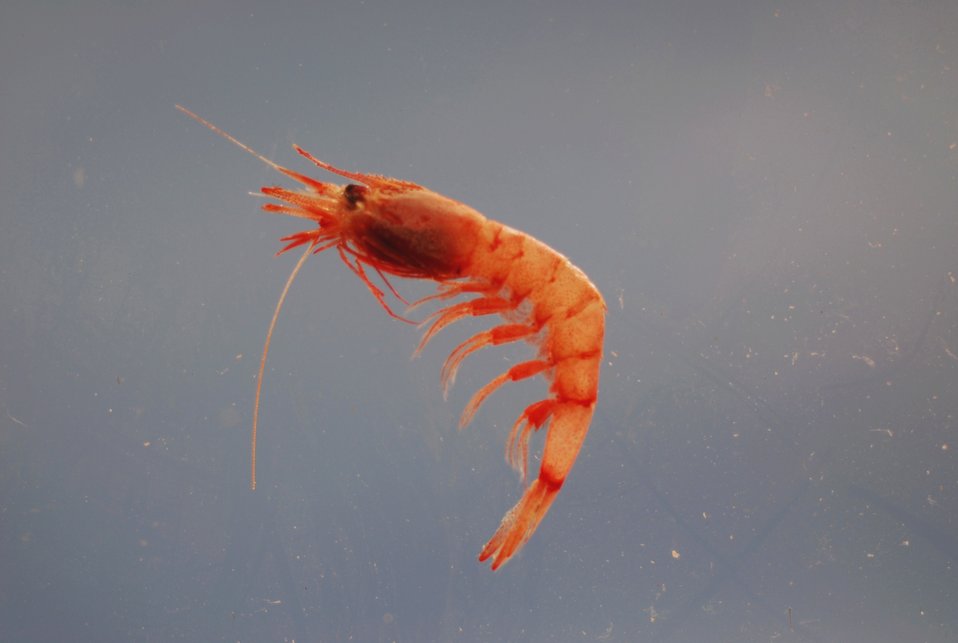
A species of deepsea shrimp (Systellaspis pellucida )